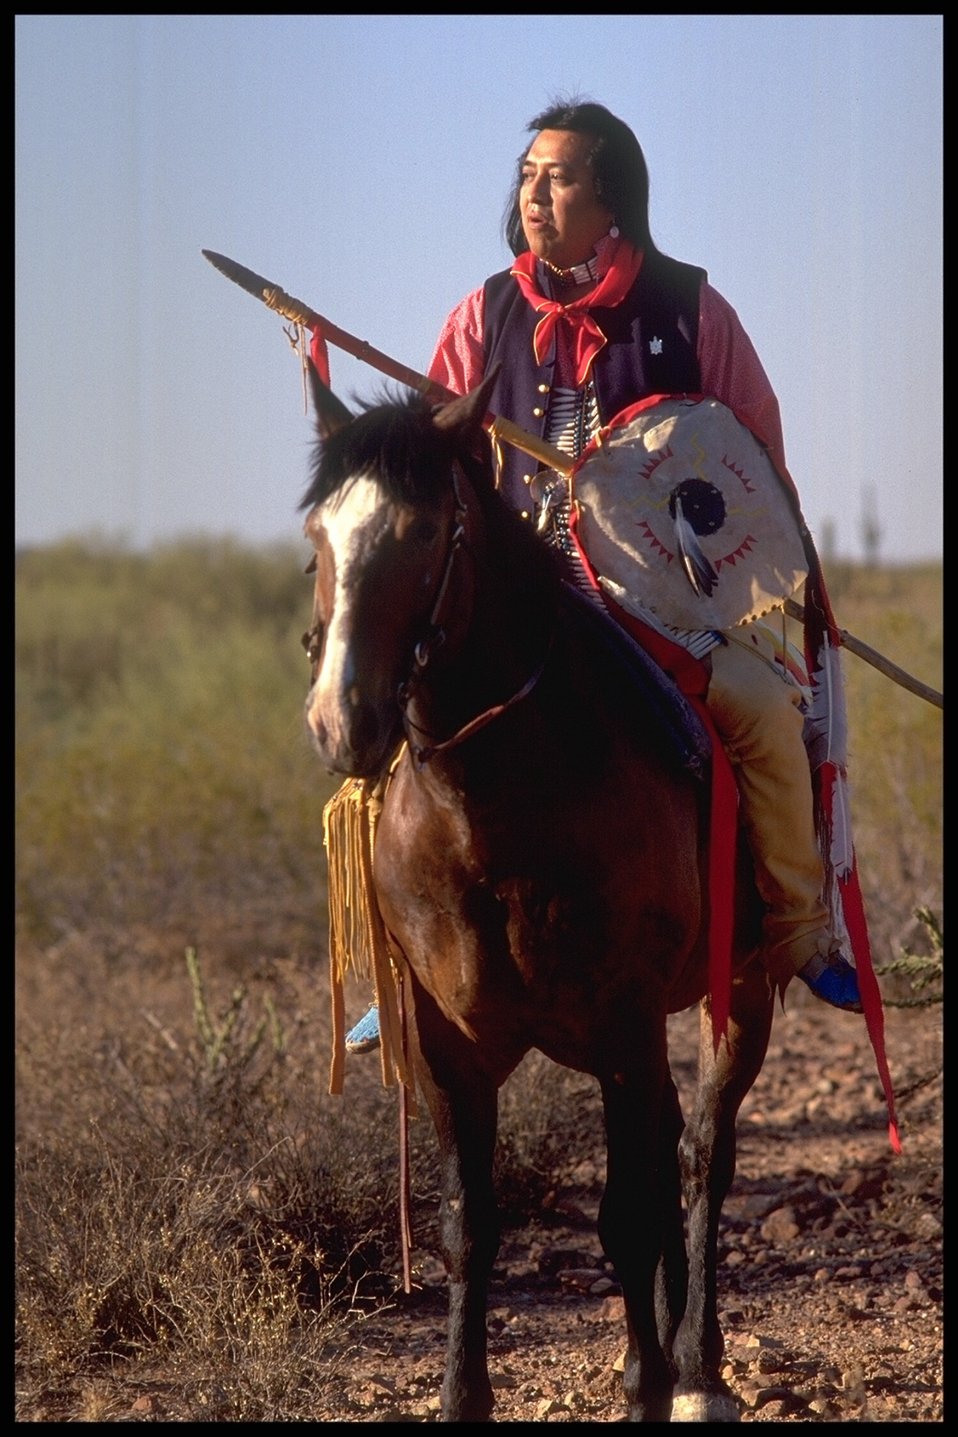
A Native-American in traditional dress riding a horse.